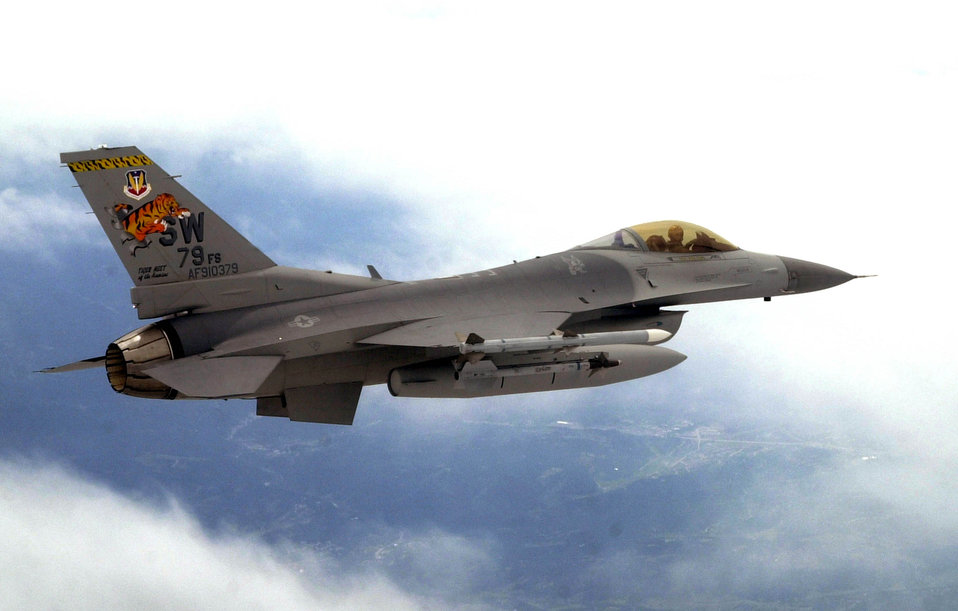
Tougher Falcon

OVER COLORADO (AFPN) - The F-16 Fighting Falcon, America's premier multirole fighter, is slipping into some tougher armor that promises to extend the aircraft's life by about eight years. The work is being done at Hill Air Force Base, Utah.